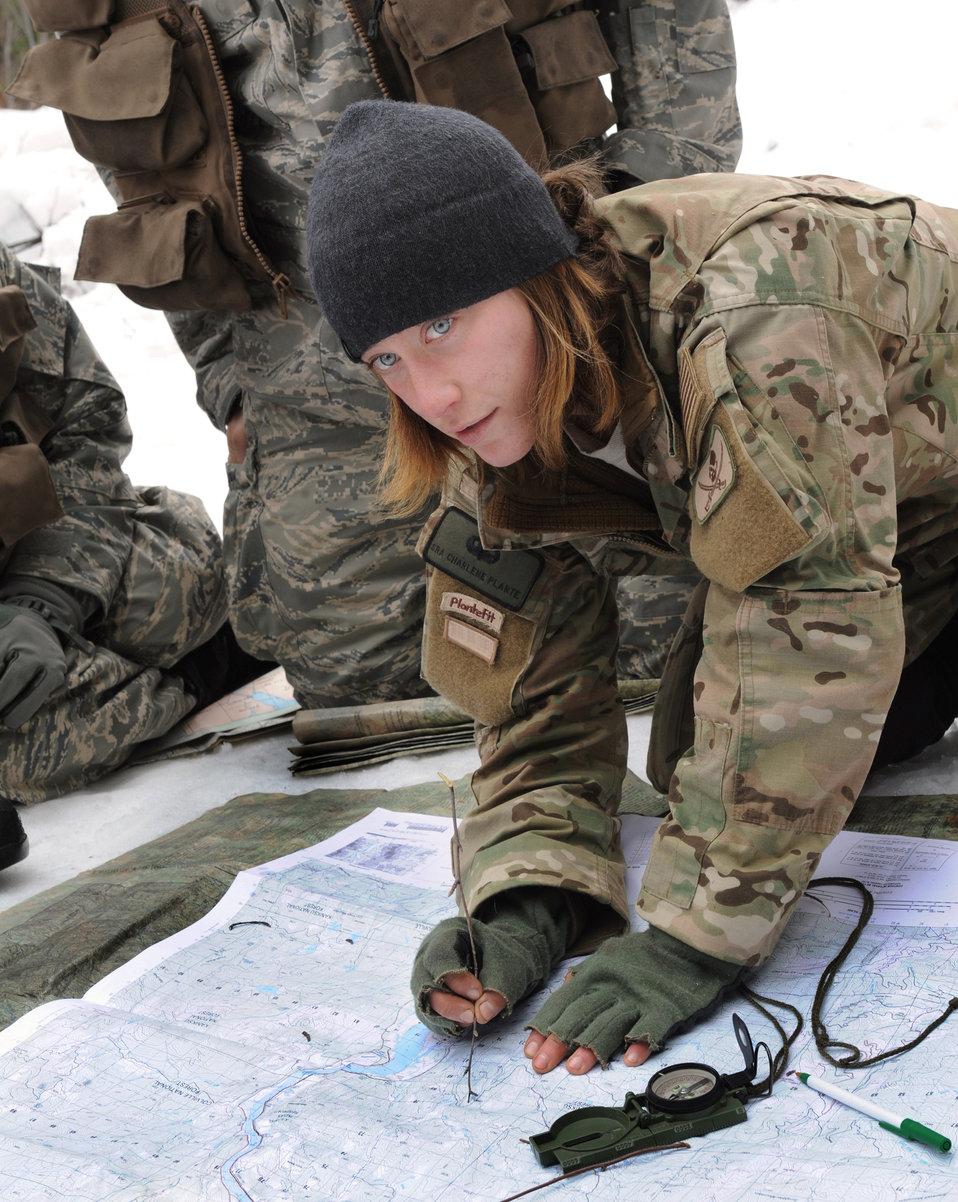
Not just for the guys

Senior Airman Charlene Plante, 22nd Training Squadron, Survival Evasion Resistance Escape specialist, teaches her students triangulation March 13, 2011 in Colville National Forest, Wash., The purpose of this block of training is to teach students how to pinpoint their location using a map, compass and sticks.